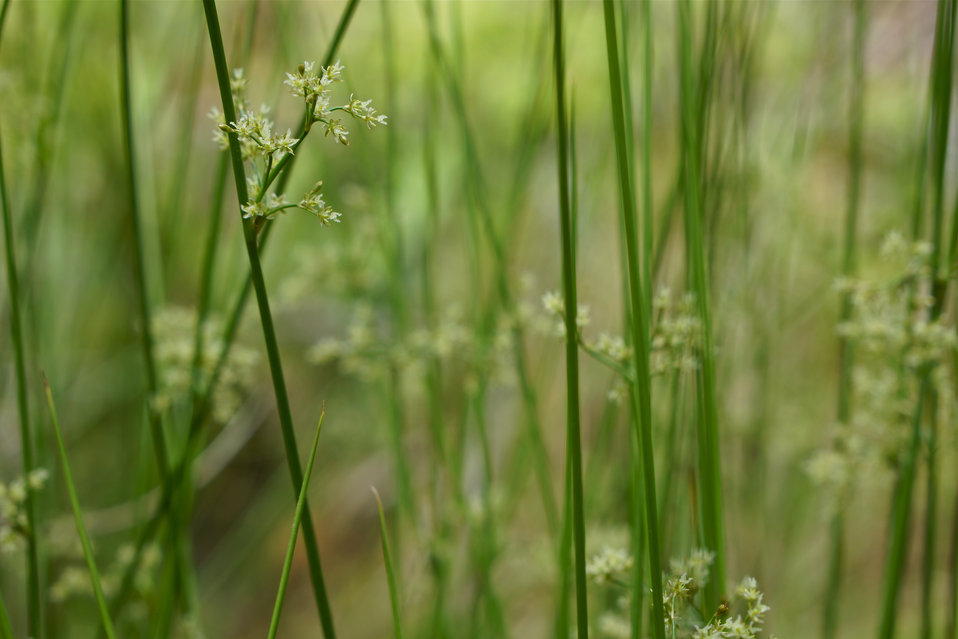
Rush in bloom

In May, bog conservationists from Tennessee, North Carolina, and Georgia convened in the north Georgia mountains for the spring, 2014 meeting of the Bog Learning Network. The event provided an opportunity for biologists to see, first hand, the result of management efforts at two north Georgia bogs. More importantly, the outings provided an opportunity to share innovative approaches to bog management, such as the role of the Georgia Plant Conservation Alliance in conserving rare plants and coordinating a cadre of volunteers to work on bog management.

The Bog Learning Network was convened in the winter of 2013 as a way to bring together people working for bog conservation across the Southern Appalachians. Southern Appalachian bogs are one of North America’s rarest habitats and home to many rare plants and animals.